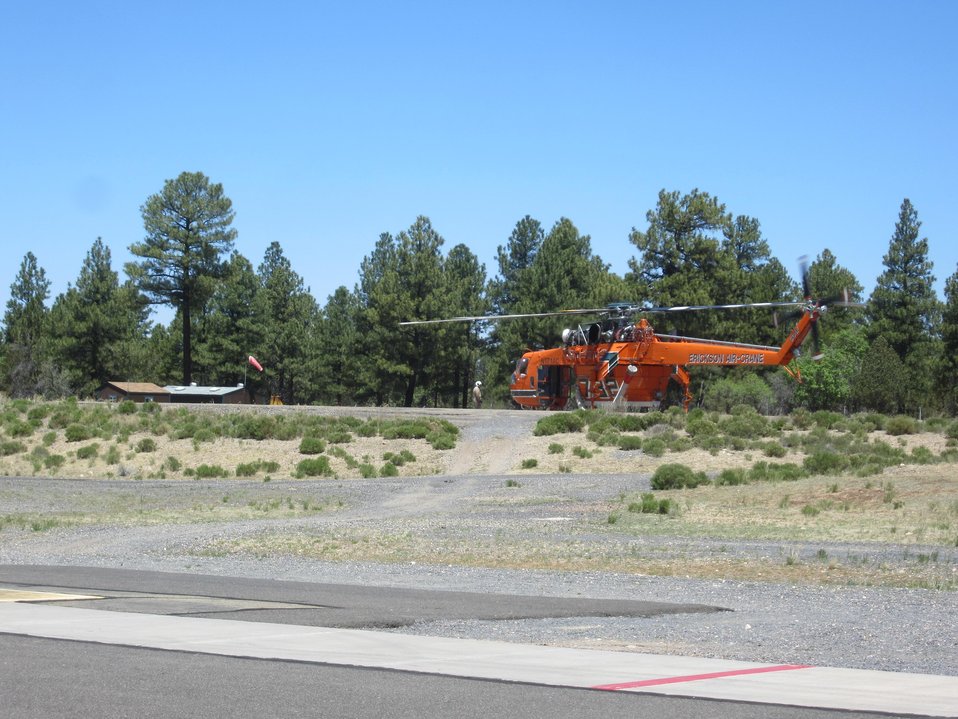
Type 1 Erickson Sky Crane Helicopter prepares for another hard day of fire suppression at the Galahad Fire on Jun. 1, 2014. The Galahad Fire on the North Rim on the Walla Valley Peninsula in the Grand Canyon National Park in Arizona began on May 23, 2014 from lightening and has consumed 2, 950 acres to date and is 30% contained.